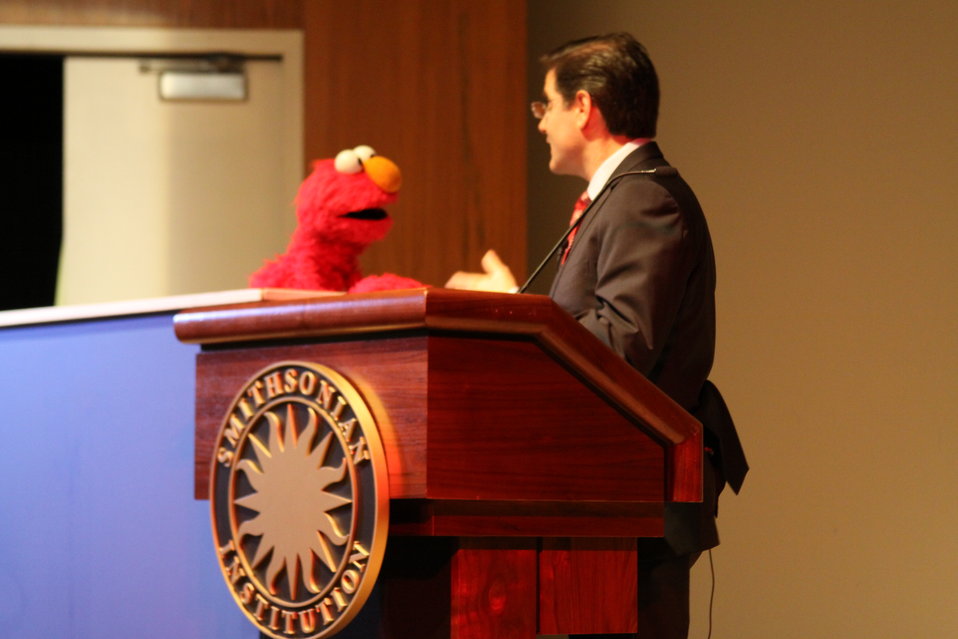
March 12, 2010- Smithsonian Broadband with Elmo